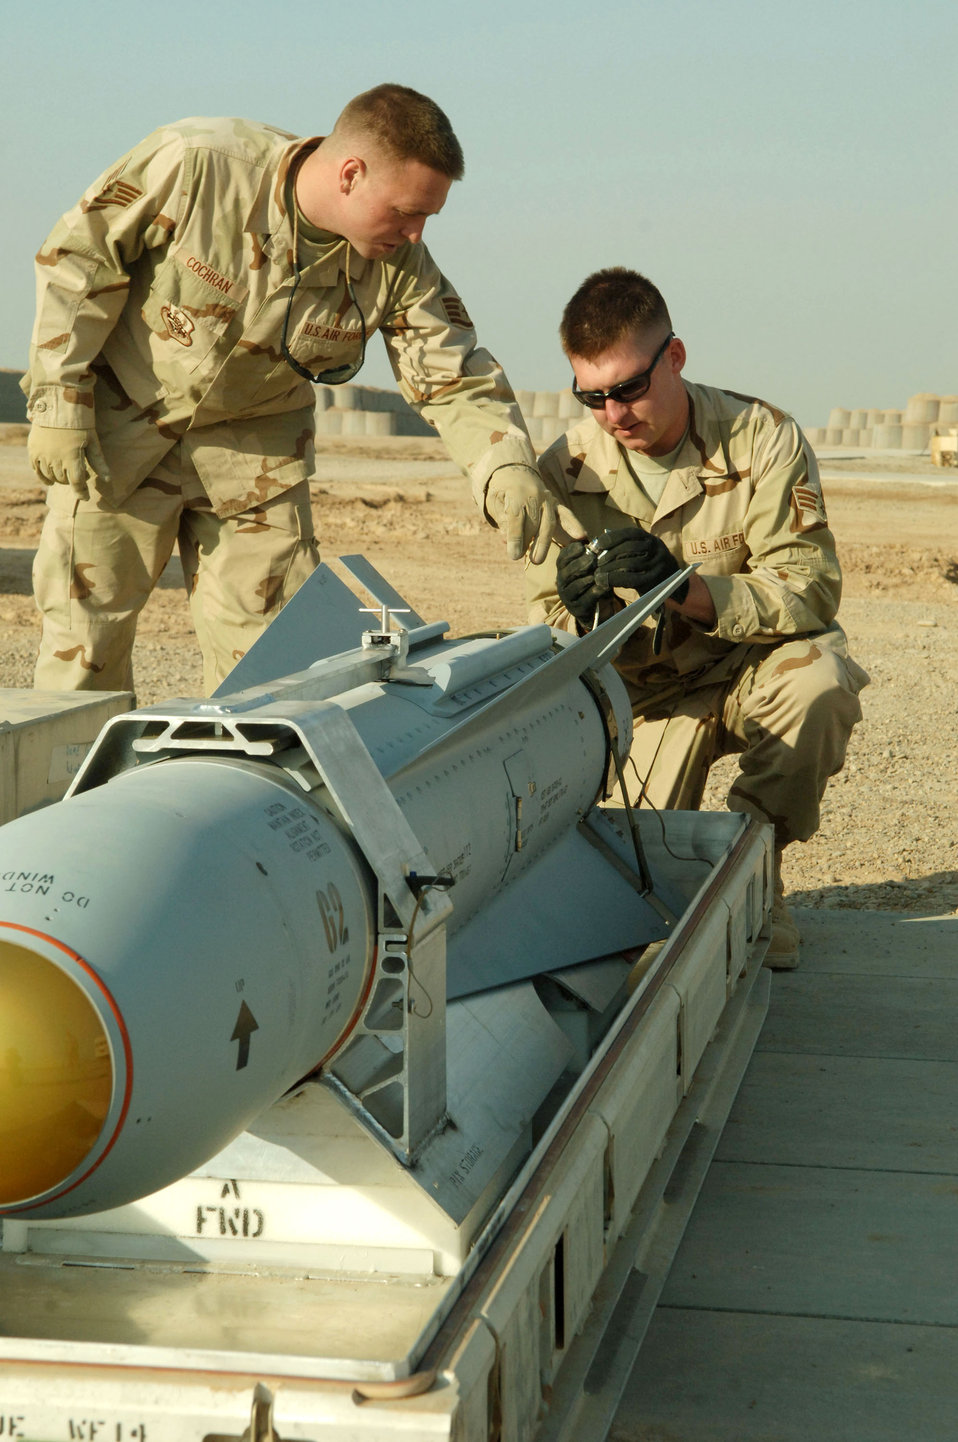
Putting steel on target

Staff Sergeant Chris Cochran and Senior Airman Jason Williamson inspect the triggering device on a missile Nov. 29 at Balad Air Base, Iraq. Both are assigned to the 332nd Expeditionary Maintenance Squadron Ammunition Flight. Sergeant Cochran is deployed from Cannon Air Force Base, N.M., and Airman Williamson is deployed from Sioux Falls, S.D.